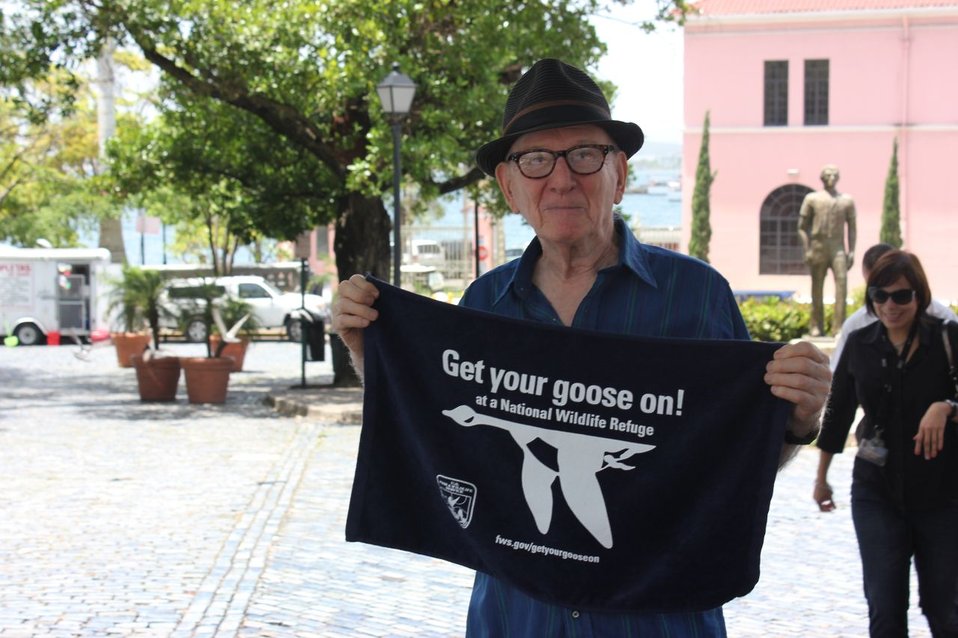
Get Your Goose On!

This local San Juan, Puerto Rico resident, a long-time advocate for conservation, loved the Get Your Goose On! concept and asked to pose with the towel to show his support.